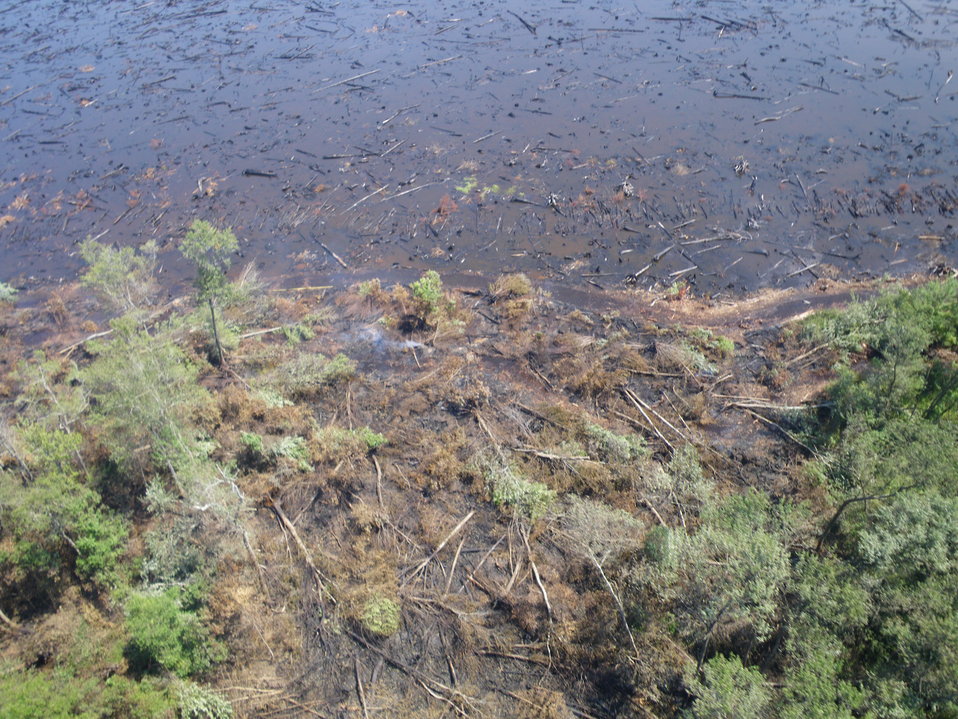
Still smoke after Irene

Suffolk, VA, August 2011: A helicopter flight over the Lateral West Fire burning on Great Dismal Swamp National Wildlife Refuge after Hurricane Irene passed shows how difficult it is to extinguish peat fires as an area still burns next to a completely flooded area.